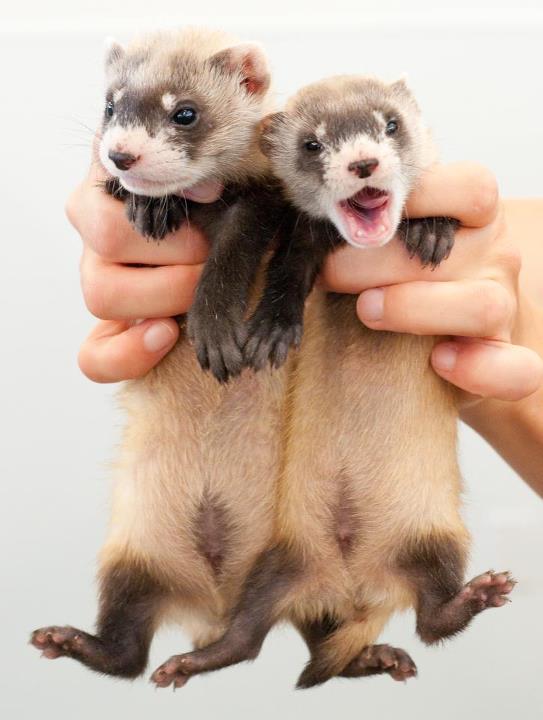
Black-footed ferrets!

National Black-footed Ferret Conservation Center, Colorado
Photo Credit: Kimberly Tamkun (USFWS)
March 2012

Watch for new fesnyngs this Spring! Say what?

Photos of two BFF kits from last year at the ferret center. Springtime is almost here and we will begin the breeding season soon!

Stay tuned as we follow 2012's new businesses! What does that mean? A litter of ferrets is known as a “business” or historically as a “fesnyng”!!